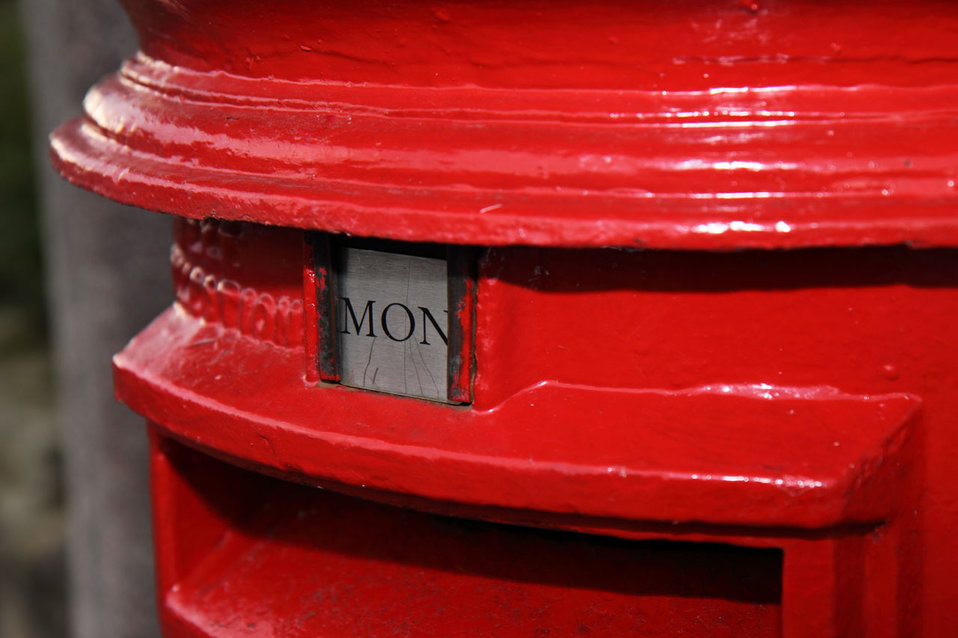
British postbox

Red british postbox.